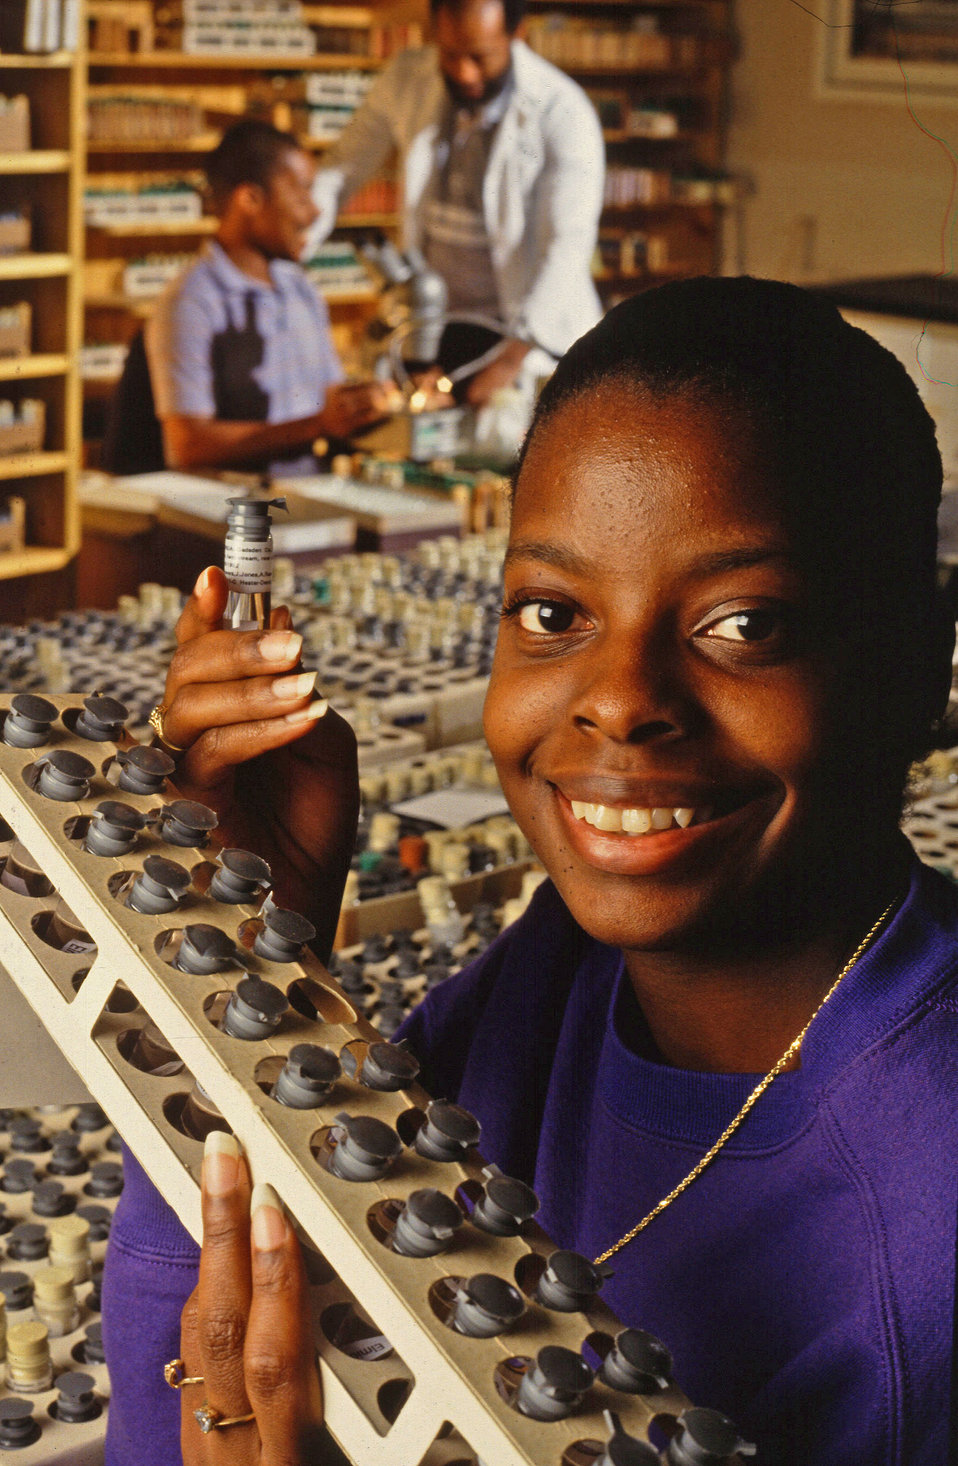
Florida Agricultural and Mechanical (A&M) University landscape design and management student Johnnene Addison helps sort aquatic insects to be used in biological monitoring of water quality.